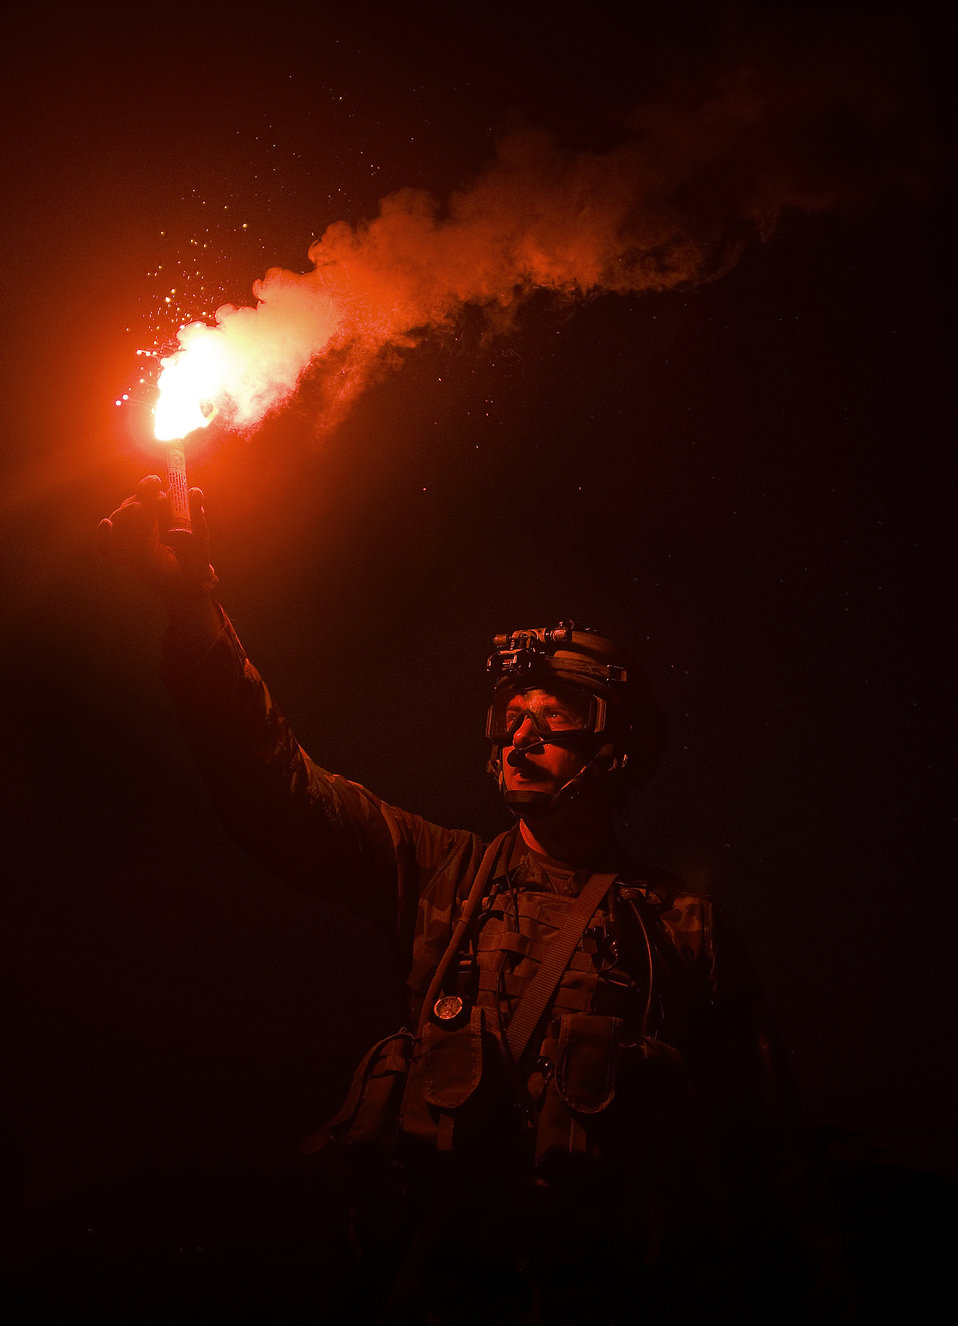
Follow the red flare

Tech. Sgt. Wes Hufnagel signals during a rescue training mission March 9 at Patrick Air Force Base, Fla. He is a pararescueman assigned to the Air Force Reserve Command's 920th Rescue Wing.